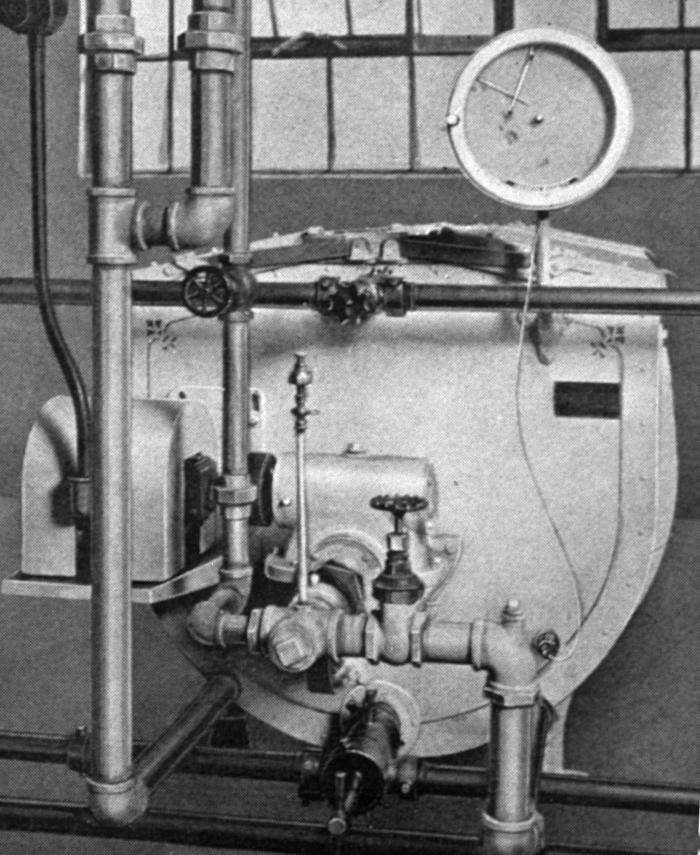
Depicted in this historic 1929 photograph was a three hundred-gallon Cherry Burrell twin-pasteurizer that was equipped with an American universal recorder, as well as an exterior view of a now obsolete coil, "vat" type pasteurizer. The photograph was taken at the Oak Grove Dairy in Clinton, Iowa.